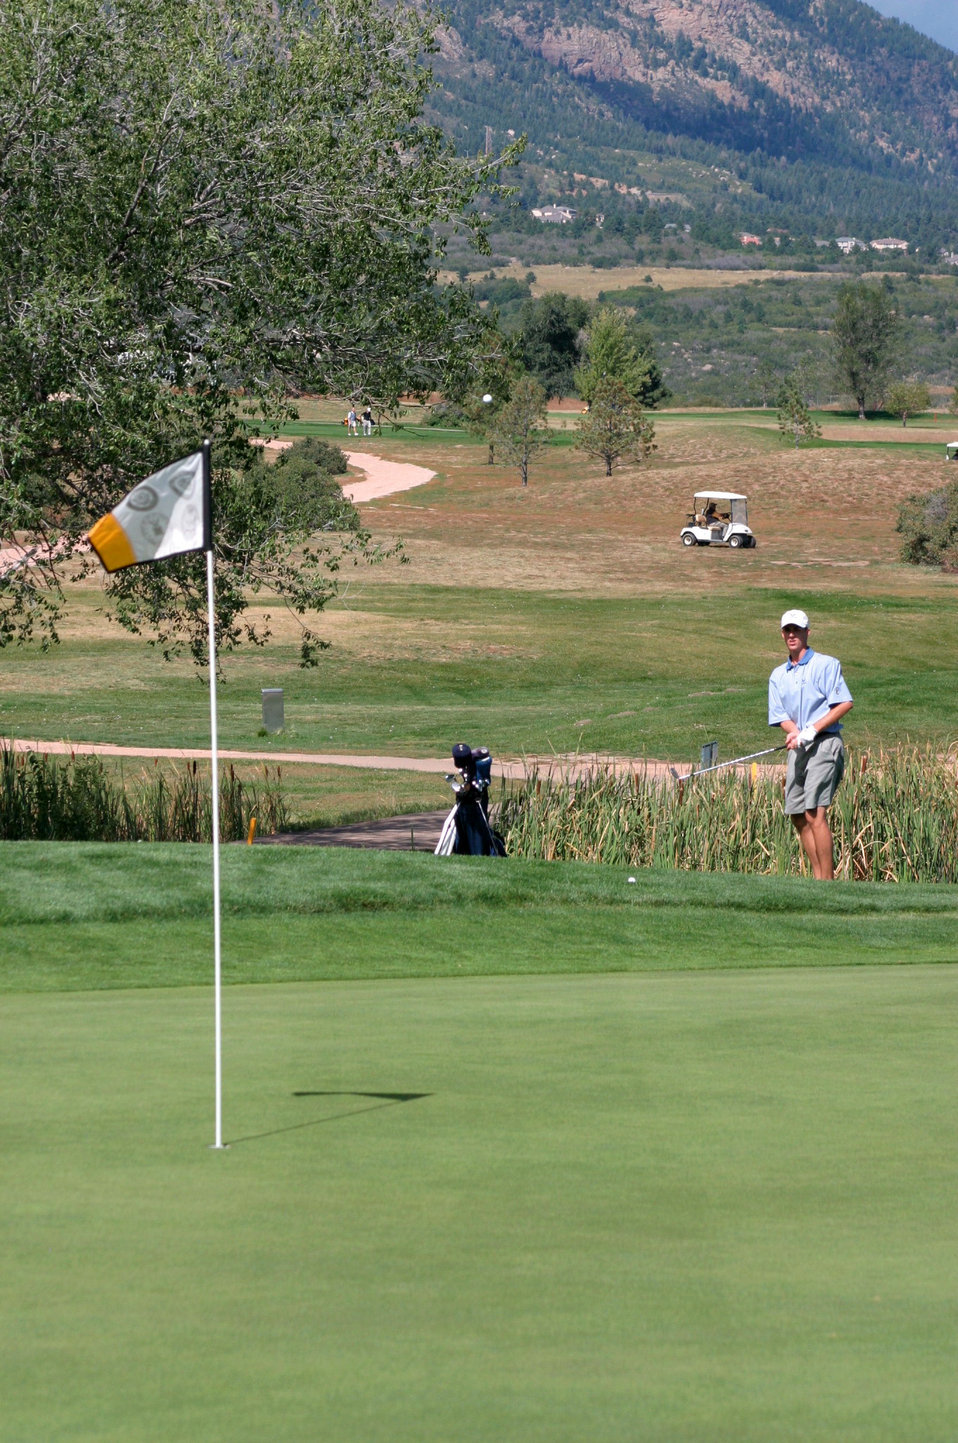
Air Force wins 2004 Armed Forces Golf Championship

FORT CARSON, Colo -- Matthew Peterson chips onto the green during the 2004 Armed Forces Golf Championship here. The Air Force golf team won the four-day match. Peterson's score of 70 led the team on Day 4. He is from Offutt Air Force Base, Neb.